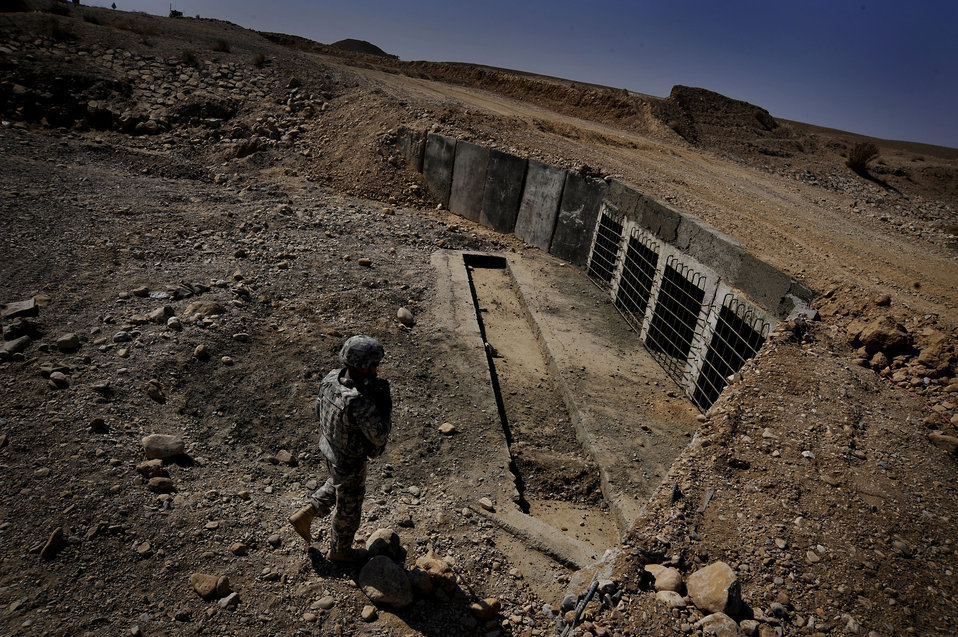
Air Force engineers help keep Afghan roads safe for travel

Capt. Rick Vermillion inspects a bridges for improvised explosives devices, damages or traces of tampering Oct. 23, 2009, in Zabul Province, Afghanistan. The inspections provide safety to the people of Zabul as well as coalition forces while traveling. Captain Vermillion is an engineer assigned to Provincial Reconstruction Team Zabul.